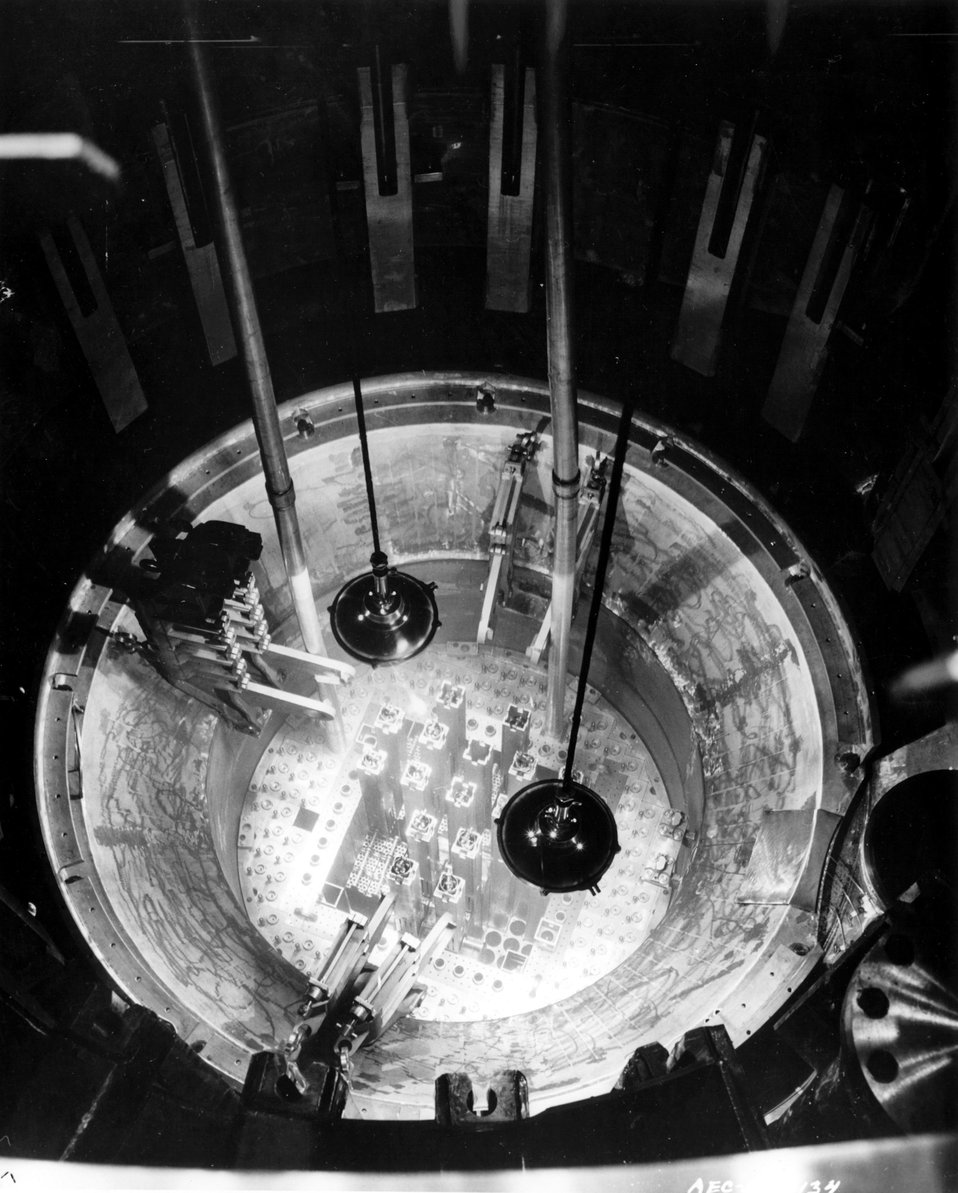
National Reactor Testing Station, Idaho... The Engineering Test Reactor Pressure Vessel and Core. Circa 1959.